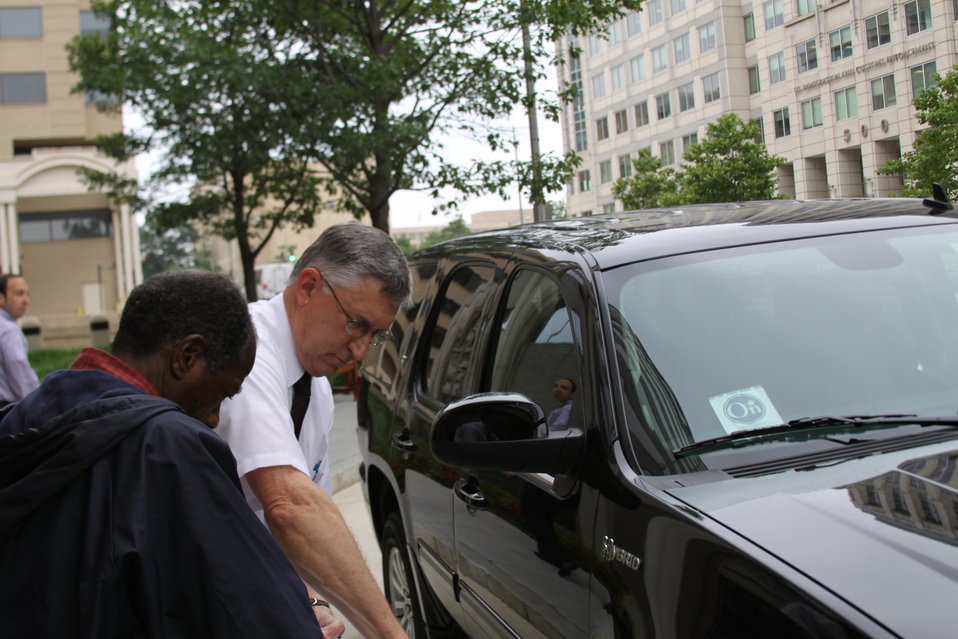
Tahoes 026